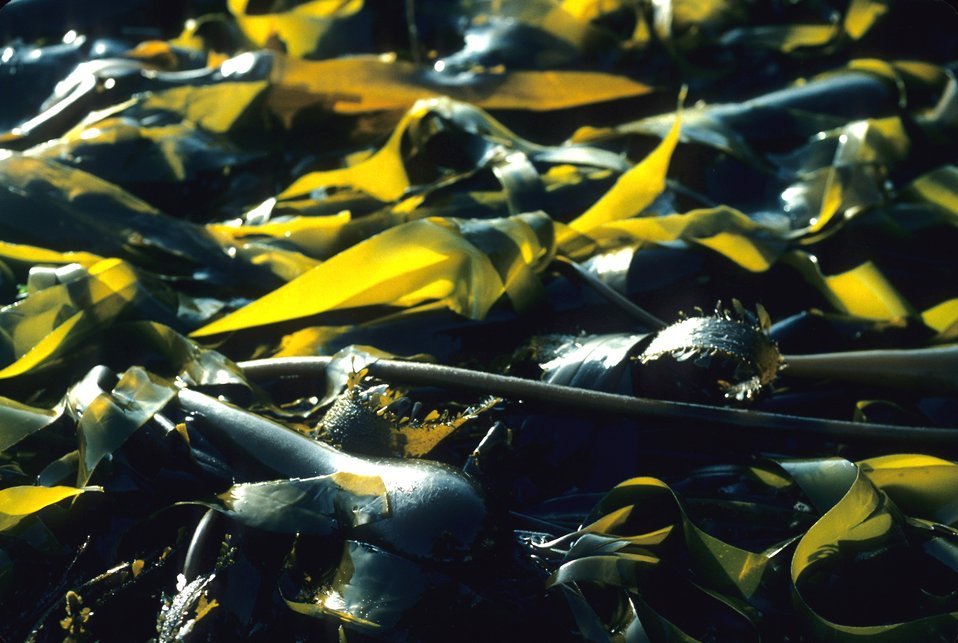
Kelp (Macrocystis pyrifera)